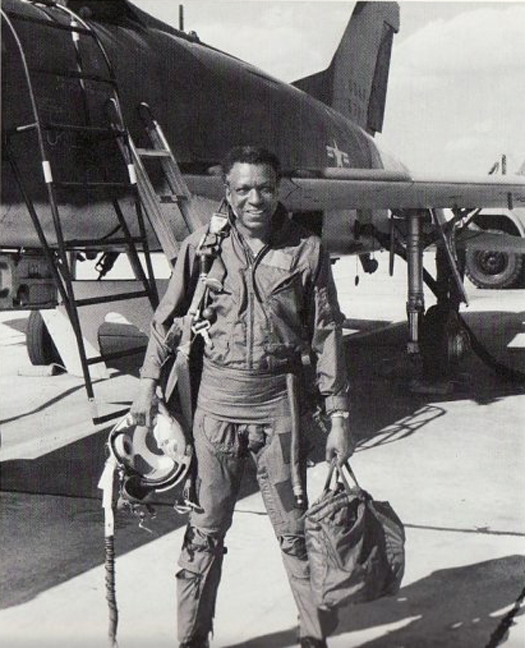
Roy LaGrone

Artist Roy LaGrone, who depicted the Tuskegee Airmen through illustrations, was himself one of the group during World War II.